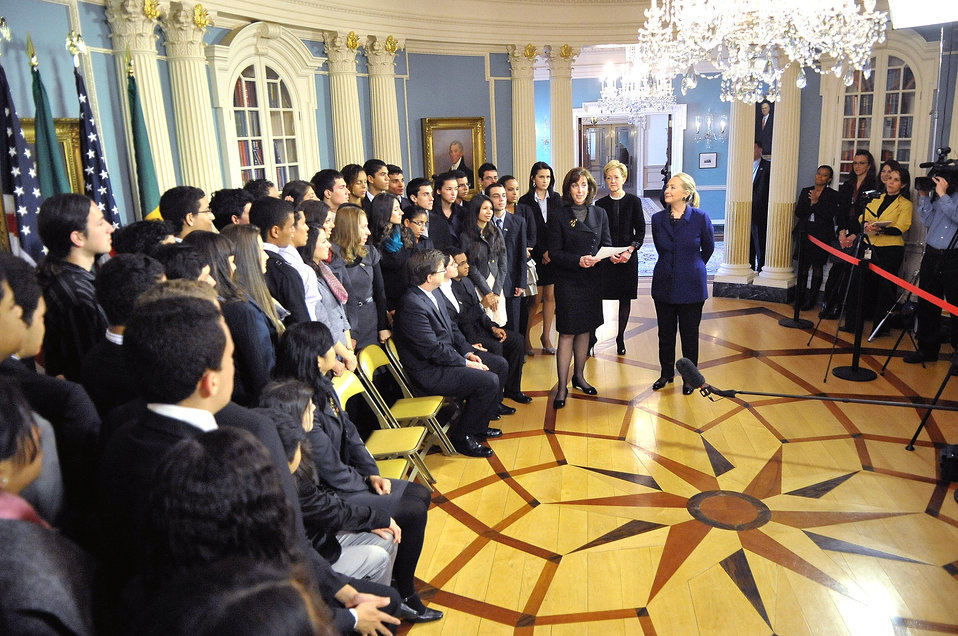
Secretary Clinton Meets With Brazilian Youth

U.S. Secretary of State Hillary Rodham Clinton meets with Brazilian youth participating in the Youth Ambassadors program at the U.S. Department of State in Washington, D.C., on January 25, 2012. The Secretary celebrated the 10th Anniversary of the Youth Ambassadors Program and highlighted the importance of engaging youth worldwide.